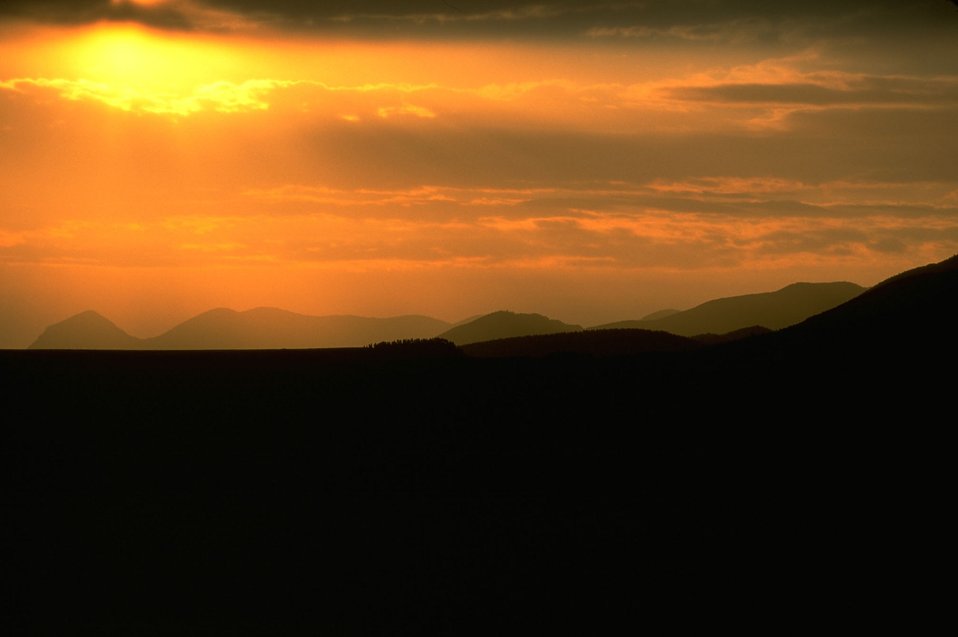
Sunset over the Missouri Breaks